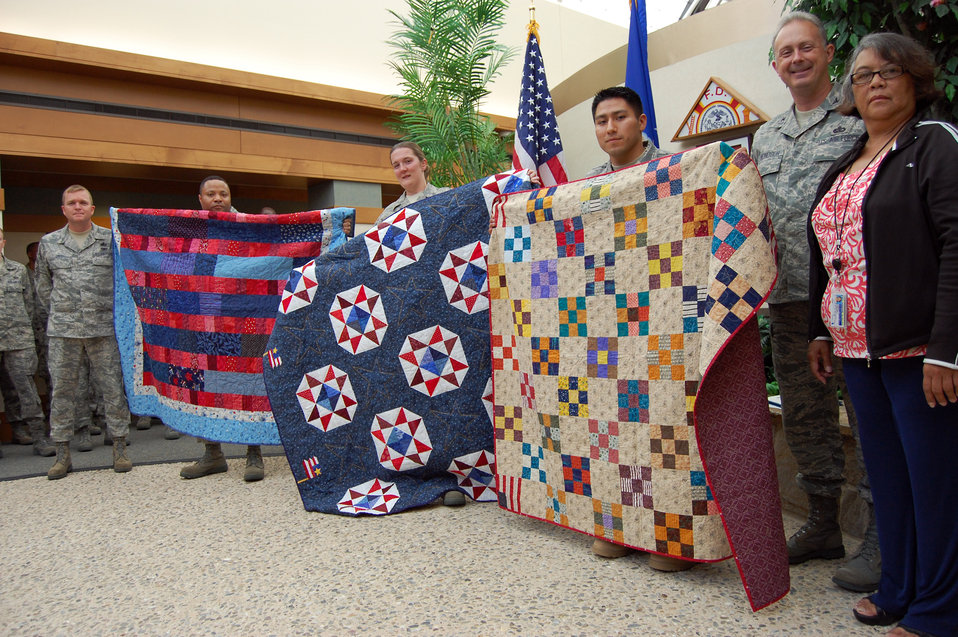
Quilts of Valor a comfort for complex wartime emotions

Chief Master Sgt. Johnny Smith stands next to Master Sgt. Frederick Hobson, Staff Sgt. Amber Merefield and Staff Sgt. Edward Martinez at a Quilts of Valor award ceremony July 3 at the Air Force Mortuary Affairs Operations Center located at Dover Air Force Base, Del. Angie Carr (right) who coordinates Quilts of Valor award presentations at the center, stands next to Col. Robert Edmondson, the AFMAO commander. Sergeant Hobson and Sergeant Merefield are mental health technicians. Sergeant Martinez is a radiology technician.